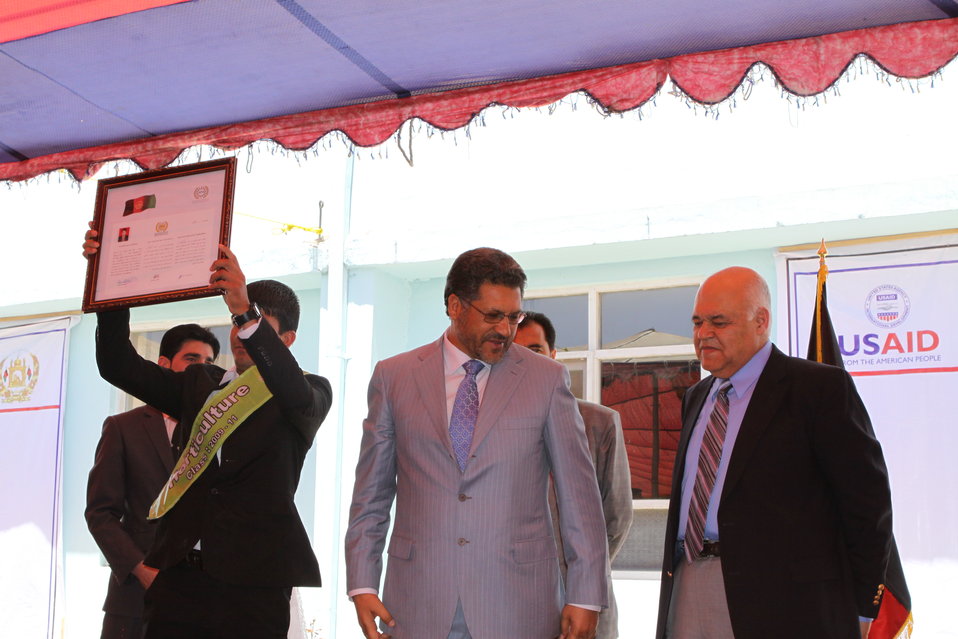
100522 ATVI Graduation 117